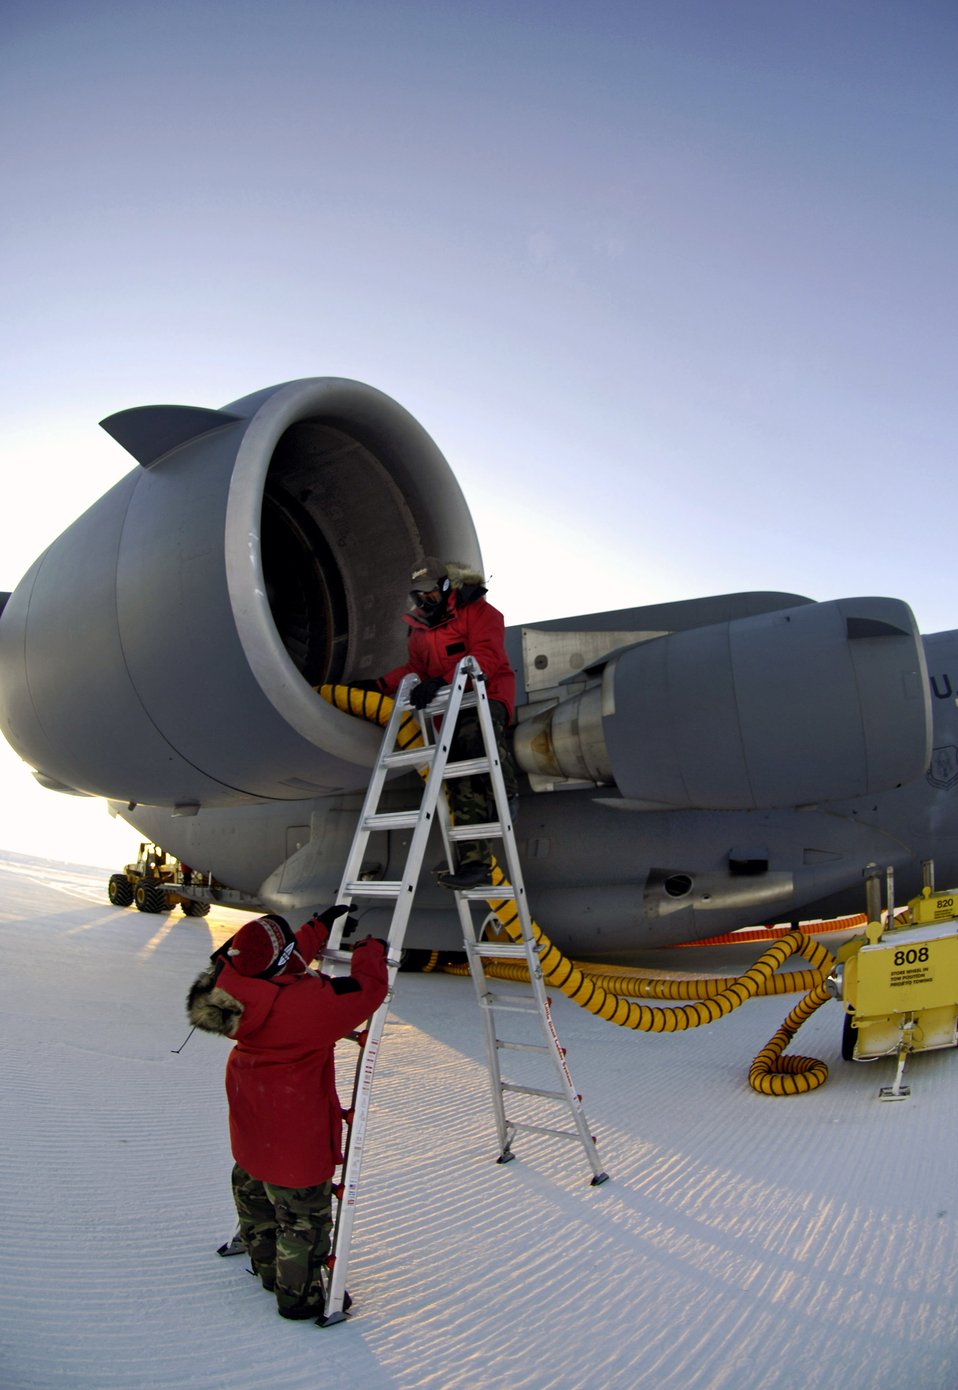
Winter flights to Antarctica wrap up

Staff Sgt. Jennifer Torres and Senior Airman Thomas Grover attach heater hoses to the engines of a C-17 Globemaster III for an Operation Deep Freeze winter fly-in mission Aug. 25 at Pegasus White Ice Runway, Antarctica. Because of the extreme temperatures, heaters are used on the aircraft to prevent maintenance problems and keep it functioning properly upon engine start-up.